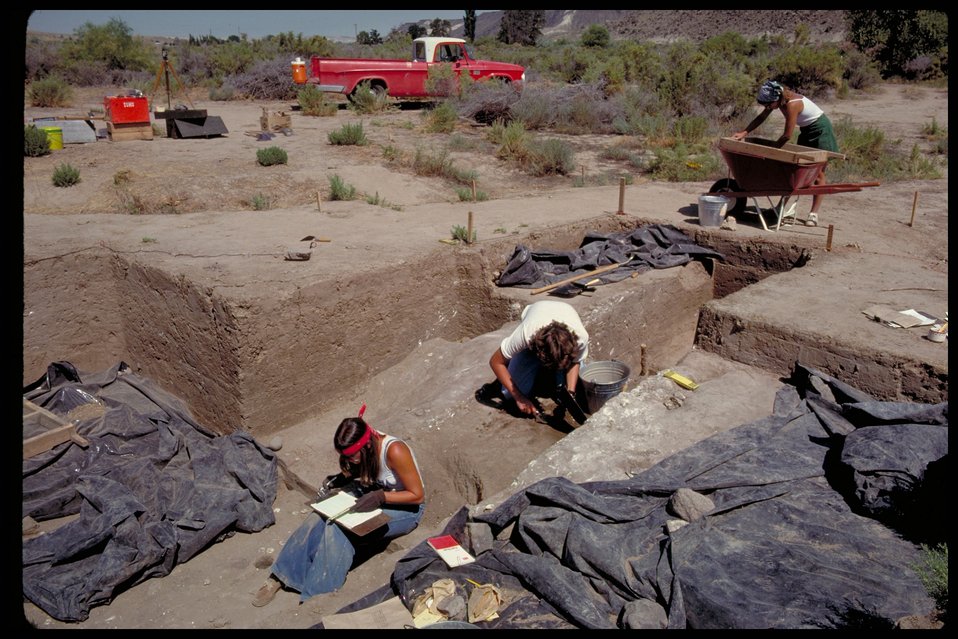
Archeological Site Near Givens Hot Springs Lower Snake River District Owyhee Field Office